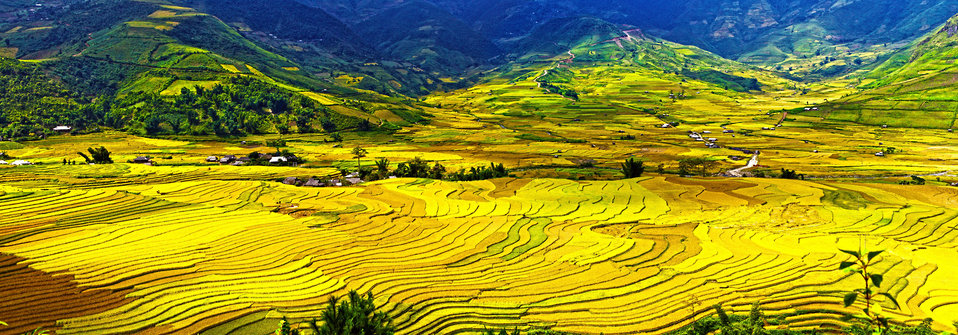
Panorama

Terraced fields in tú lệ valley, yen bai province, vietnam's northwest.